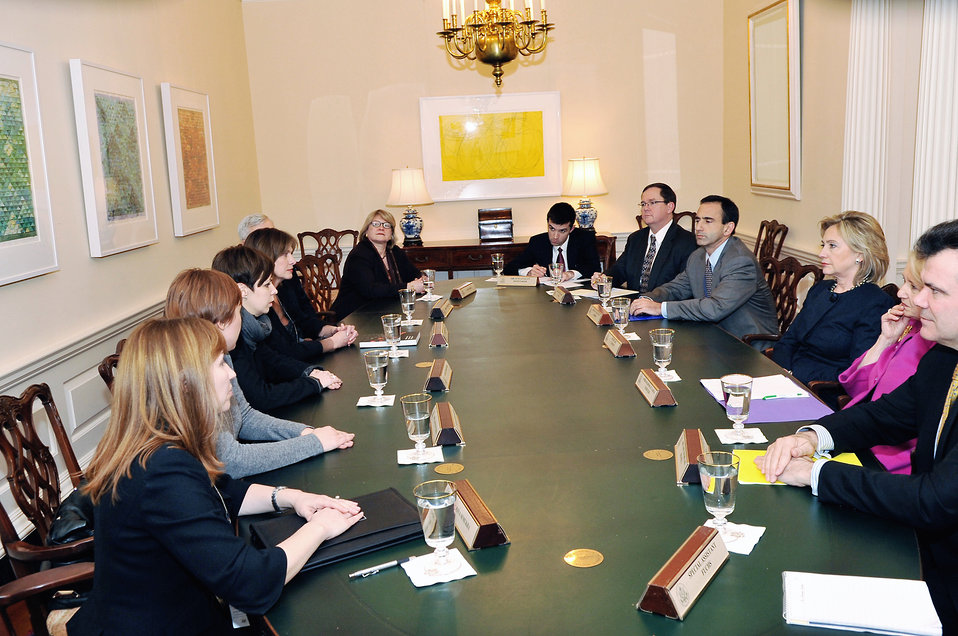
Secretary Clinton Hosts a Meeting With Belarusian American Activists

U.S. Secretary of State Hillary Rodham Clinton hosts a meeting with Belarusian American Activists at the U.S. Department of State in Washington, D.C., on January 6, 2010.